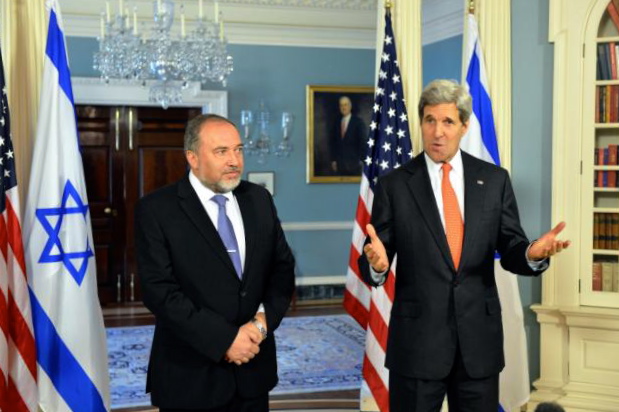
Secretary Kerry and Israeli Foreign Minister Lieberman Address Reporters

U.S. Secretary of State John Kerry and Israeli Foreign Minister Avigdor Lieberman address reporters before their bilateral meeting at the U.S. Department of State in Washington, D.C., on April 9, 2014.